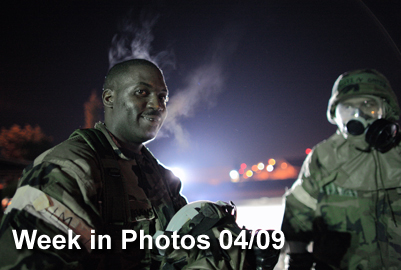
Week in Photos

Air Force Week in Photos for April 9, 2010, highlights photos from around the Air Force. In this photo by Osakabe Yasuo, Staff Sgt. Sadiq Stevens has steam rising from him after removing his gas mask April 1, 2010, at Yokota Air Base, Japan.